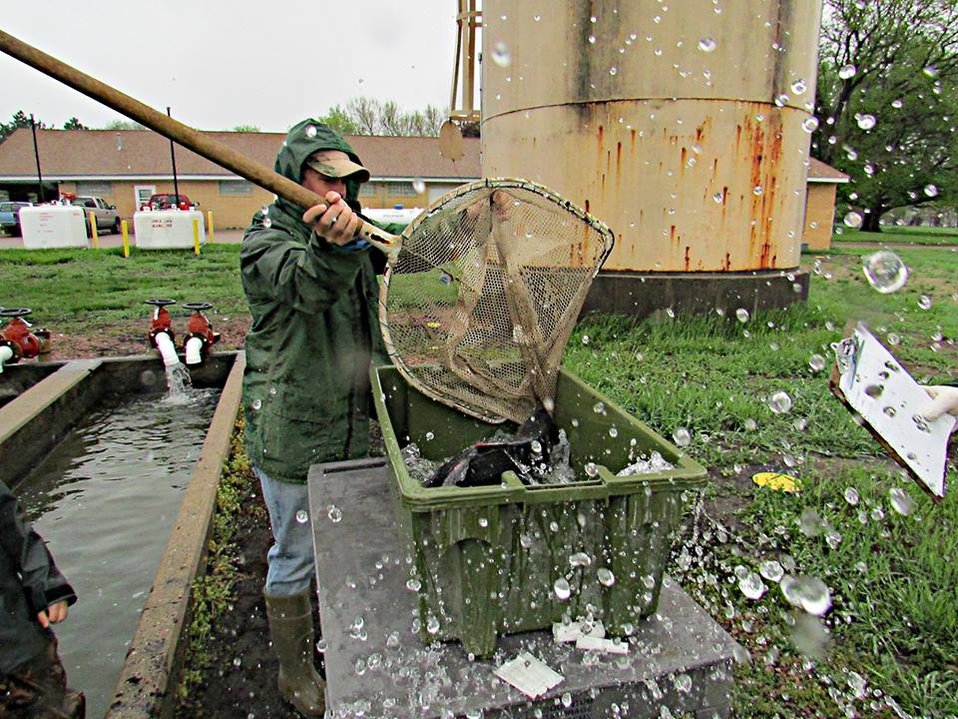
Spawning season, our busiest time of year, is just three months away.

Here is a picture from last May when we were injecting threatened blue suckers, which is done as preparation for harvesting the eggs. You can see why we need the raincoats!